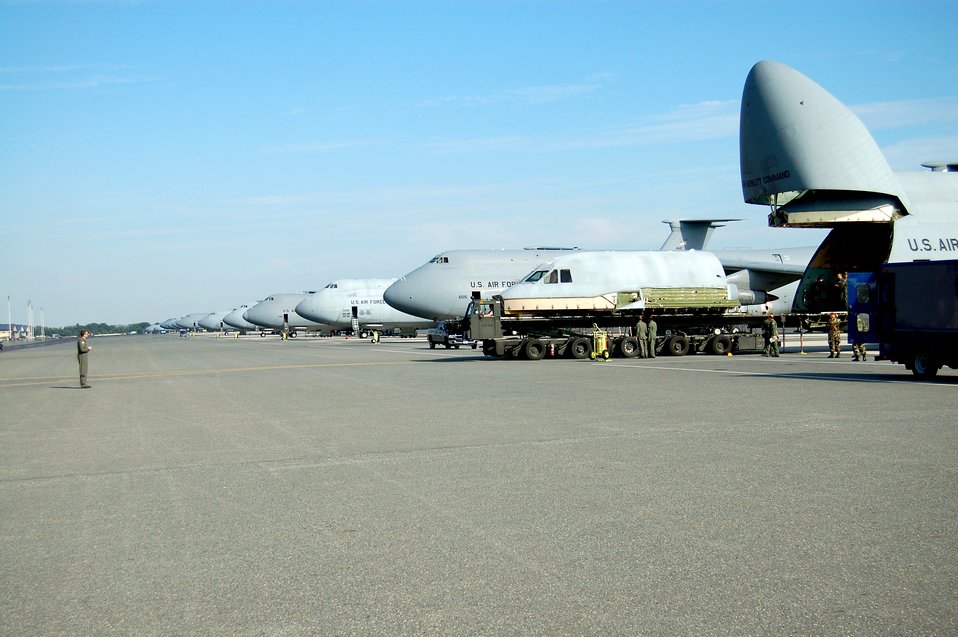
Salvaged flight deck from C-5 mishap becomes tool

The flight deck from the C-5 Galaxy that crashed April 3 is loaded onto another C-5 at Dover Air Force Base, Del., for transport to Robins Air Force Base, Ga., Aug. 22. The flight deck will be used to as a training simulator.